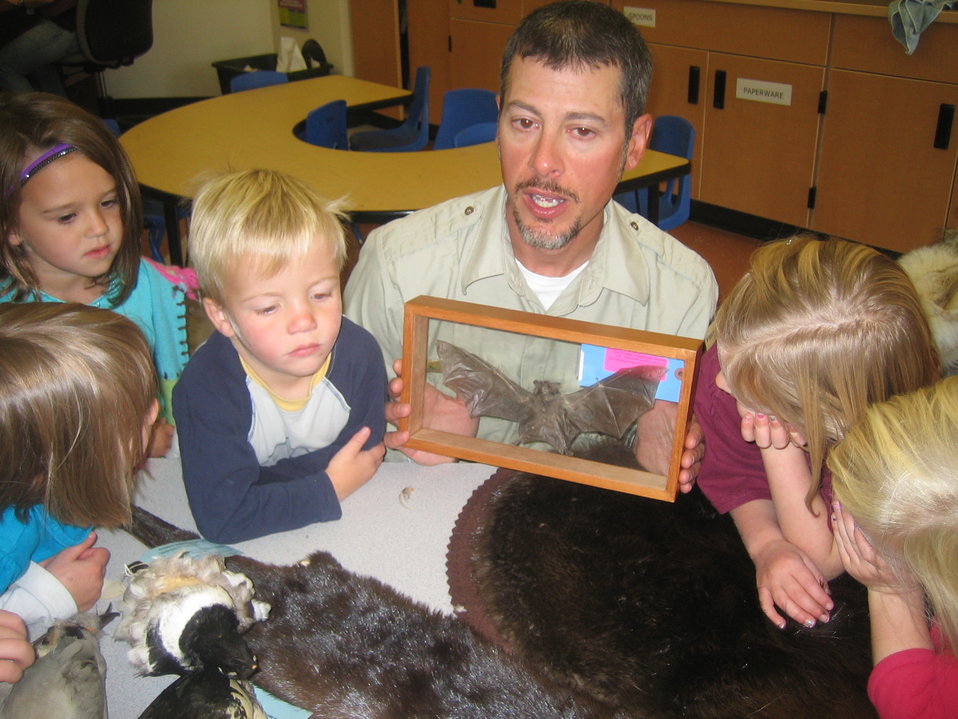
Scientists in the Community Program

U.S. Fish and Wildlife Service Mountain-Prairie Region Deputy ARD for External Affairs, Matt Kales, introduces early childhood education students at William Roberts Elementary School in Denver to some of Colorado's native and historic wildlife species.